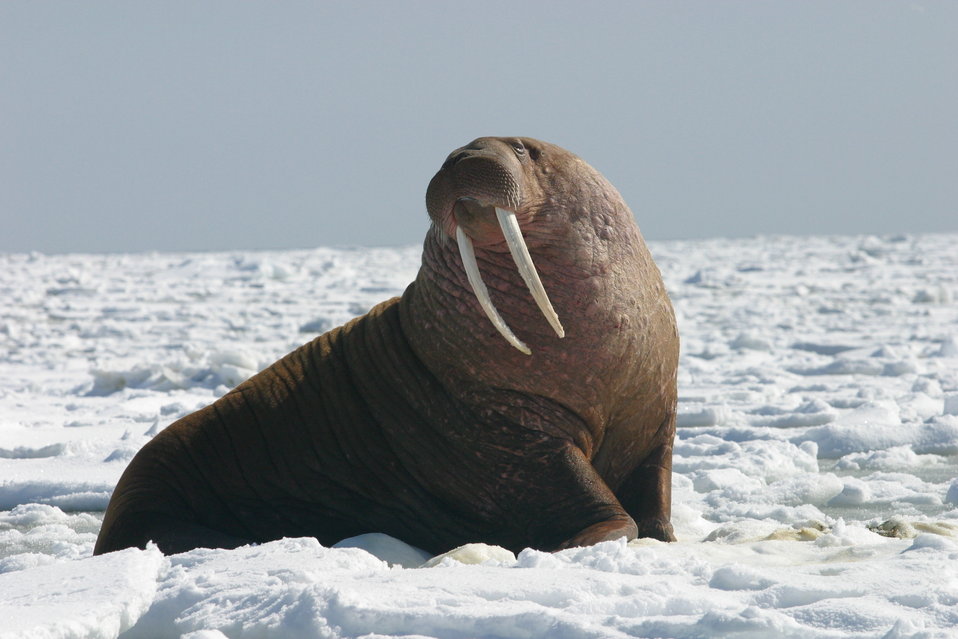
Pacific Walrus Bull

A large Pacific Walrus bull watches the camera. The adult bulls can weigh up to 3,700 pounds.